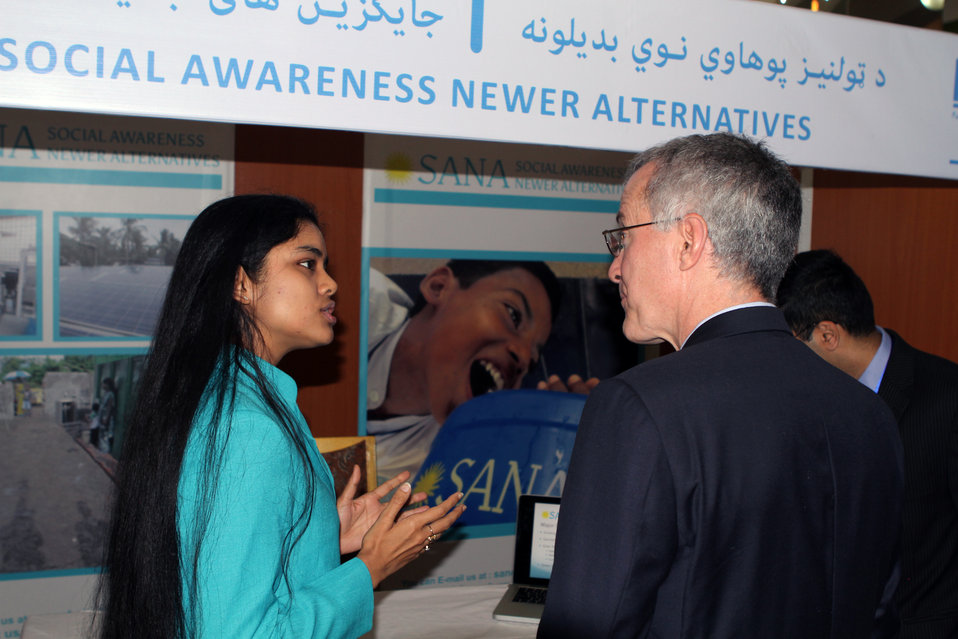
USAID Mission Director William Hammink talking with Indian delegation in India-Afghanistan Innovation Partnership Fair in Kabul